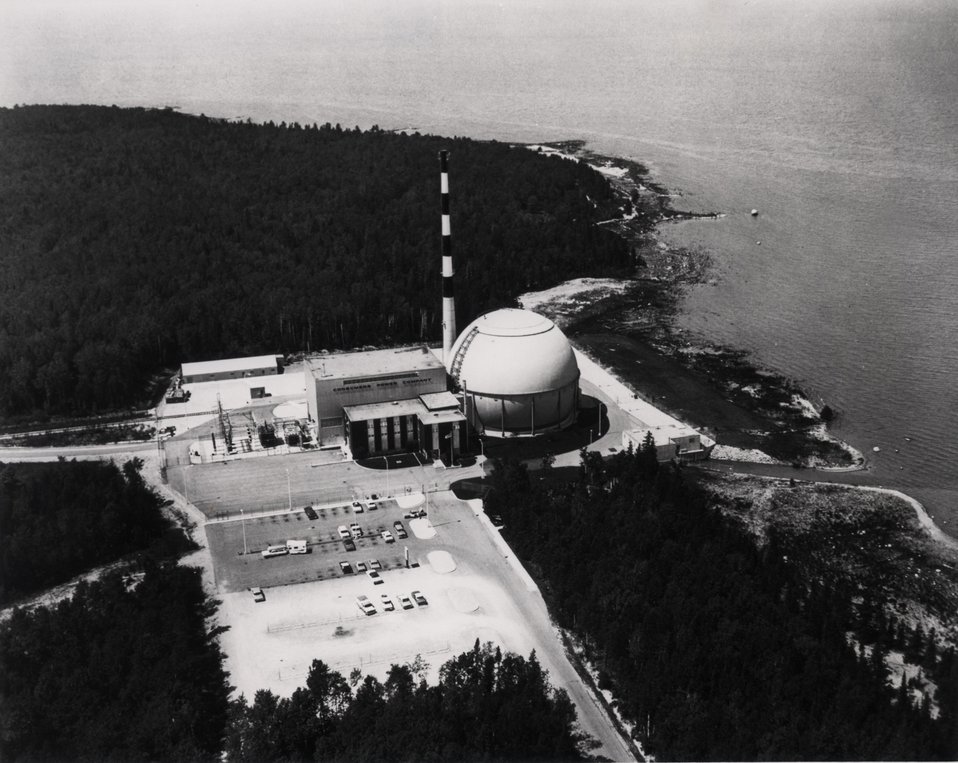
Consumer Power Company's Big Rock Point 70,300 electrical kilowatt nuclear electric generating station at Charlevoix.